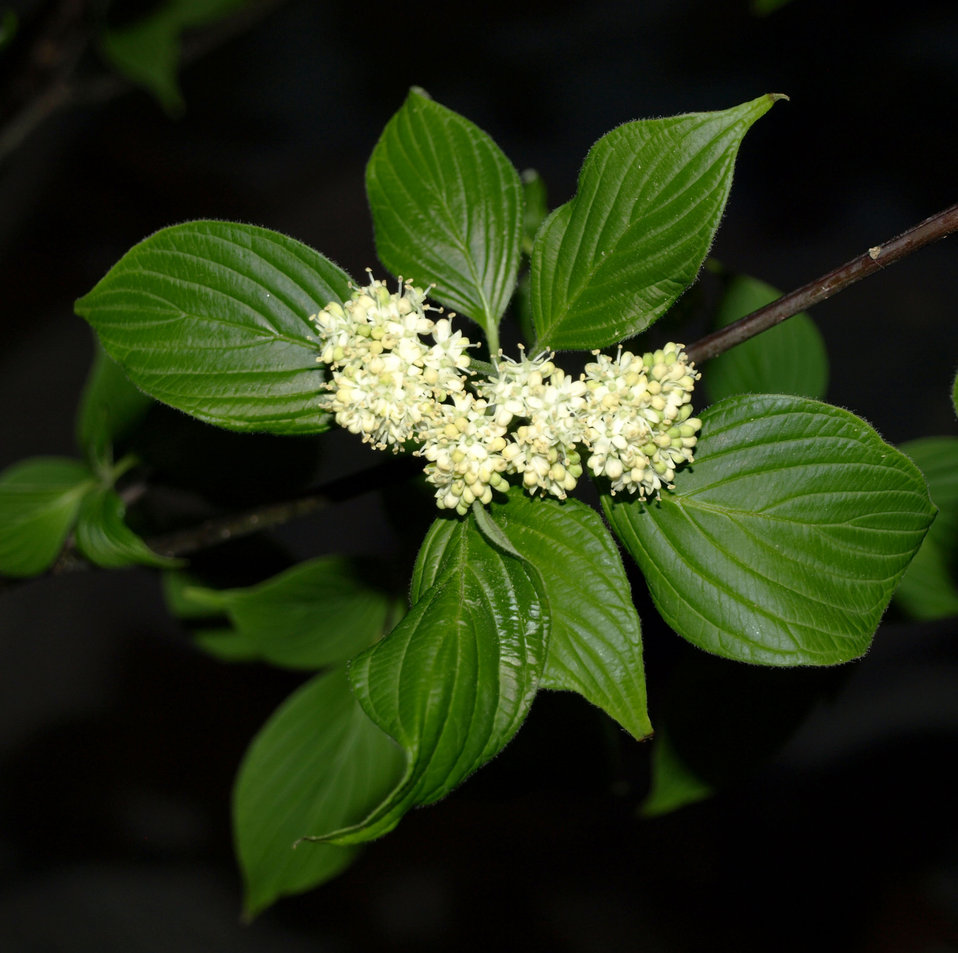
Pagoda dogwood

Cornus alternifolia (Pagoda dogwood), a native plant

Learn more about EPA’s Exhibit at the 2010 Philadelphia International Flower Show:
www.epa.gov/reg3esd1/garden/flower show.htm
www.epa.gov/reg3esd1/garden/flower show plants.htm
www.epa.gov/reg3esd1/garden/pdf/flowershow2010.pdf (6 pp, 864K)